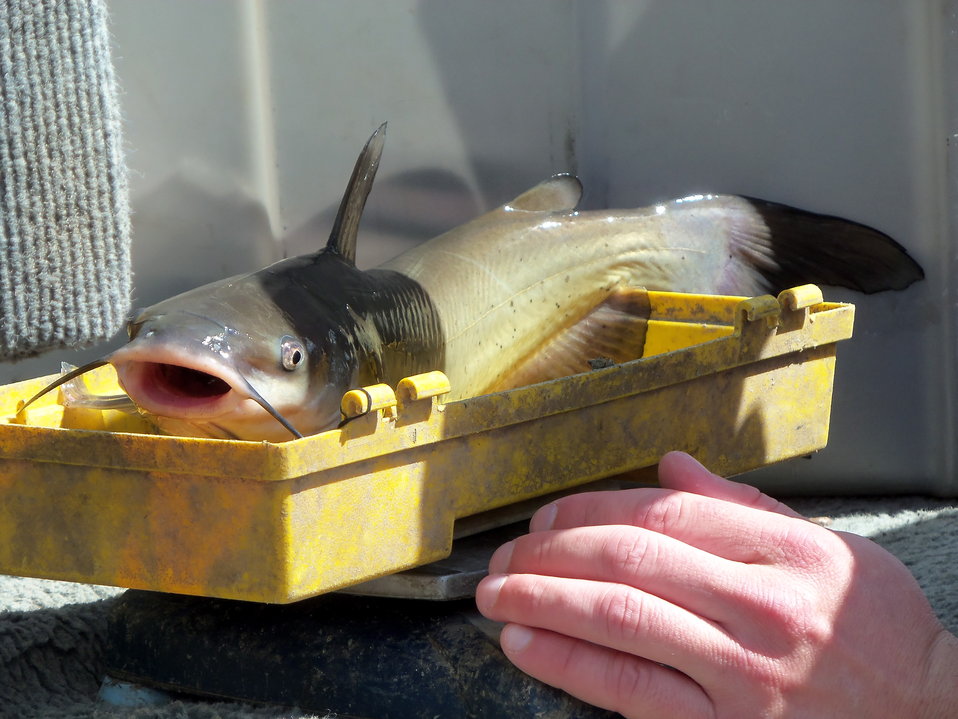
Channel catfish that was captured in electrofishing sampling efforts in the spring of 2012 in a backwaters area of the Platte River near Ashland, Nebraska.

Photo Credits: Jamie Jones / USFWS

Photo Contest Entry #94